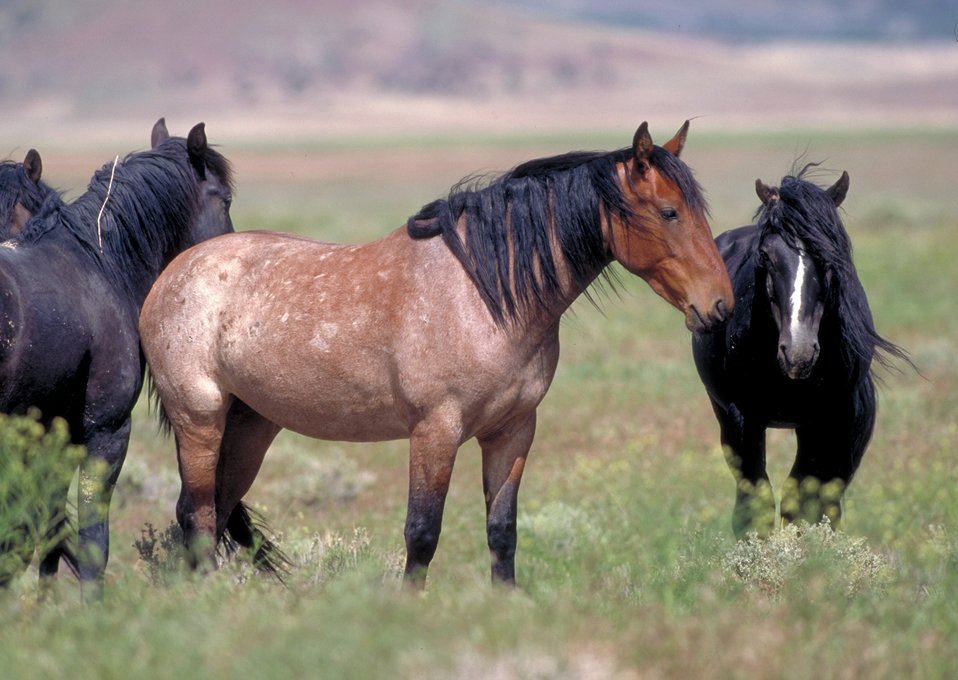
Onaqui Herd near Dugway, Utah.